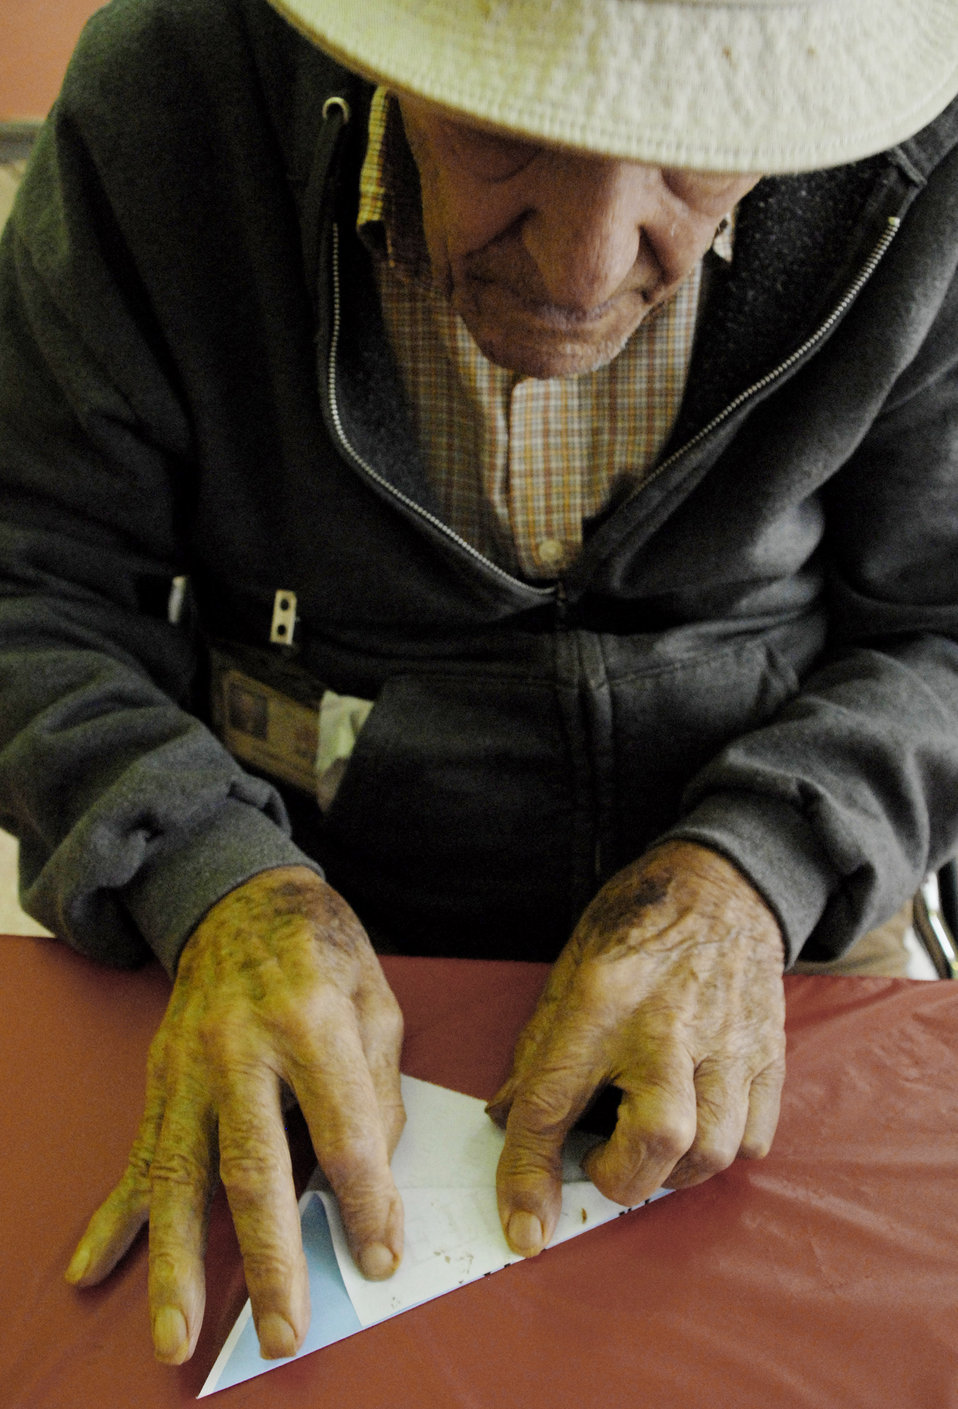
Joint Enlisted Council lift spirits at veterans home

Retired Navy Petty Officer Harry Casino makes an origami bird Oct. 16, 2009, at the U.S. Soldier's and Airmen's Home, Washington, D.C. The National Capital Region Joint Enlisted Council visited the retirees at the home to help lift the spirits of the residents.